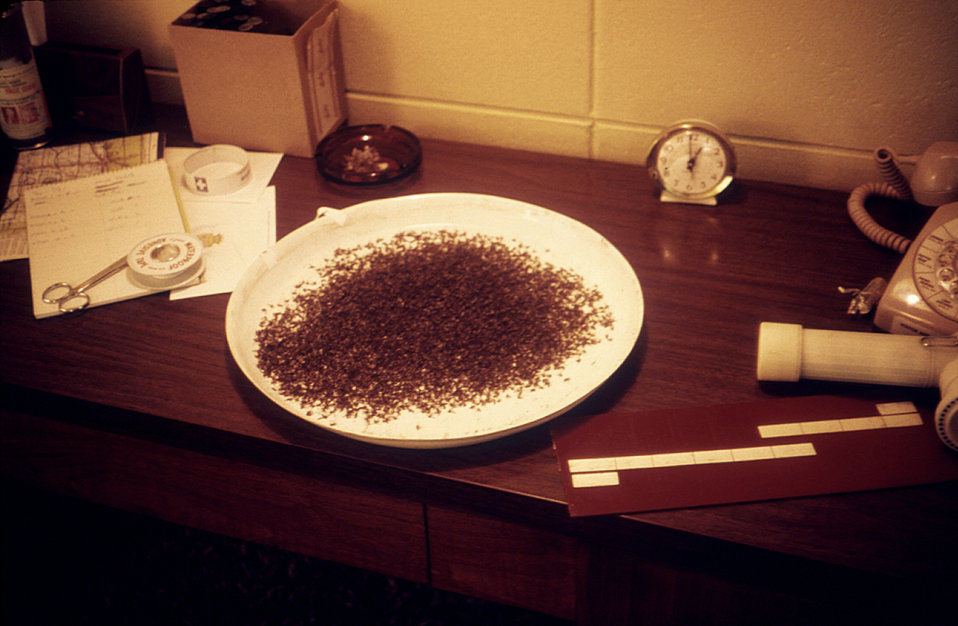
This 1975 photograph depicted the lid from a CDC-type light trap, which was turned upside down, and was brimming with a large cache of trapped North Dakota mosquitoes to be analyzed later.